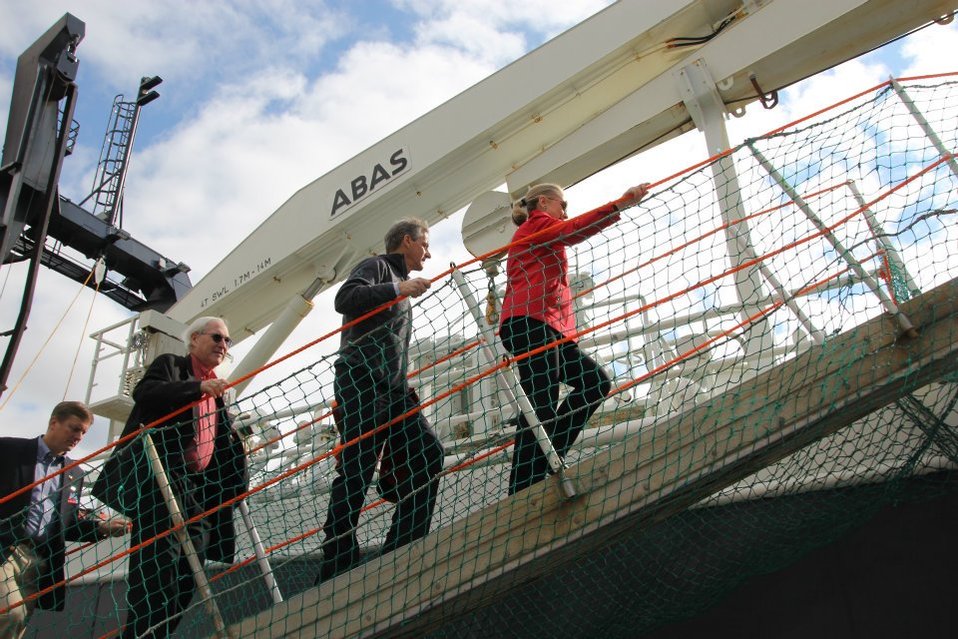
Secretary Clinton and Norwegian Foreign Minister Store Participate in an Arctic Research Vessel Tour

U.S. Secretary of State Hillary Rodham Clinton and Norwegian Foreign Minister Jonas Gahr Store participate in an Arctic research vessel tour in Tromso, Norway, on June 2, 2012.